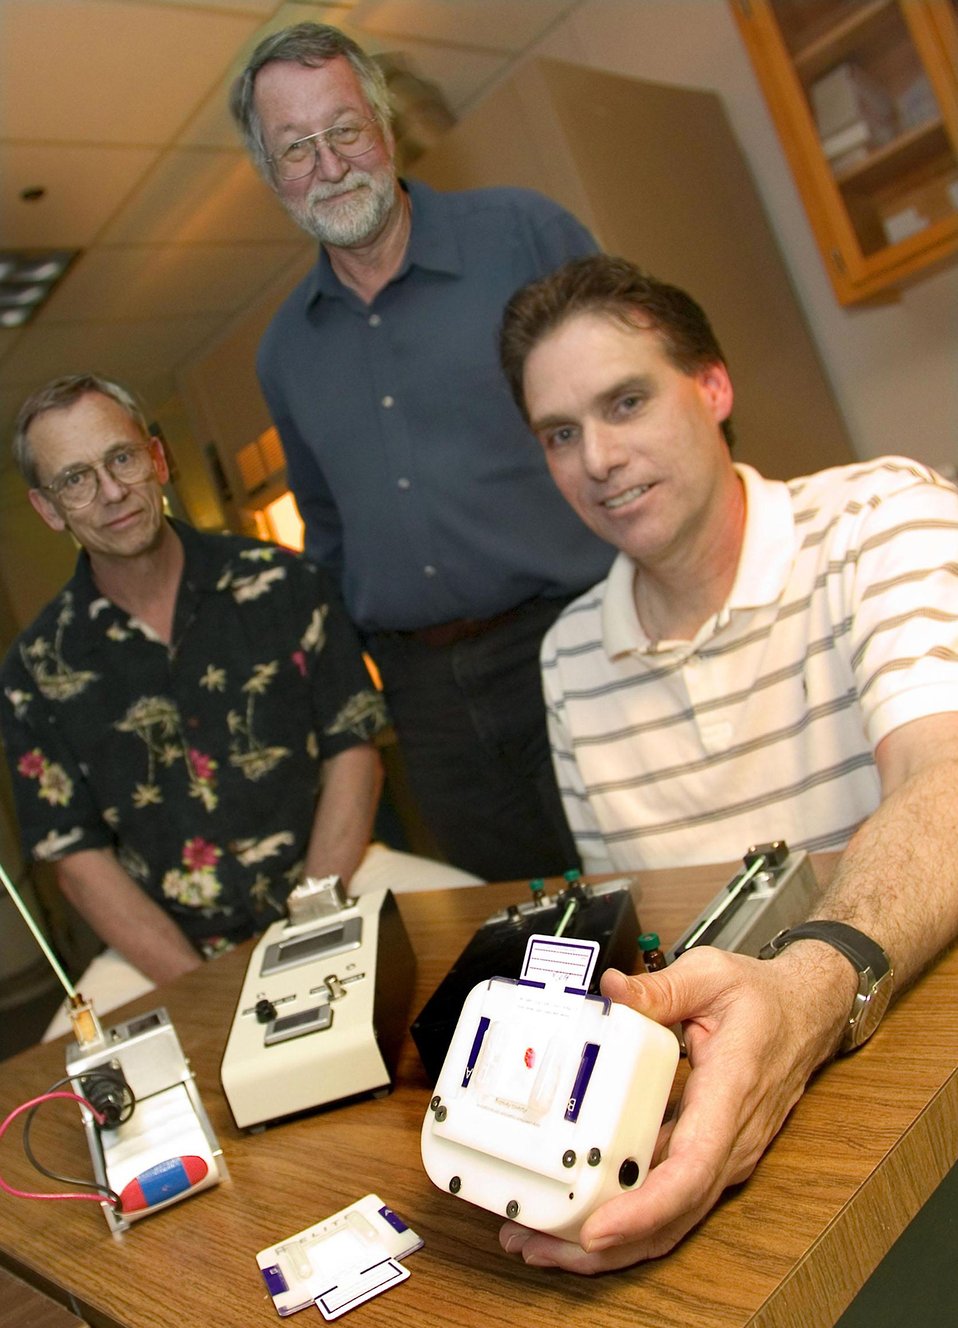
SHOWN ARE THE DEVELOPERS OF THE ELITE (EASY LIVERMORE INSPECTION TEST FOR EXPLOSIVES) EXPLOSIVE SCREENING TECHNOLOGY FROM THE LAWRENCE LIVERMORE NATIONAL LABORATORY'S FORENSIC SCIENCE CENTER.

THE ELITE CARD IS A HIGHLY SENSITIVE TO MORE THAN 30 DIFFERENT EXPLOSIVES, WHICH MAKES IT ONE OF THE MOST EFFECTIVE EXPLOSIVE DETECTION SYSTEMS AVAILABLE. IT IS LIGHTWEIGHT (FRACTION OF AN OUNCE), SMALL (2X3 INCHES) INEXPENSIVE (LESS THAN $25) AND STABLE (SHELF LIFE OF TWO YEARS). THE CARD CAN BE USED BY AIRPORT SCREENERS, BORDER PATROL AGENTS, SECURITY AGENTS, FIRST RESPONDERS, POLICE AND MILITARY PERSONNEL CAN SECURE REAL-TIME ANALYSIS WITHIN ONE TO FOUR MINUTES WHETHER EXPLOSIVES ARE PRESENT.